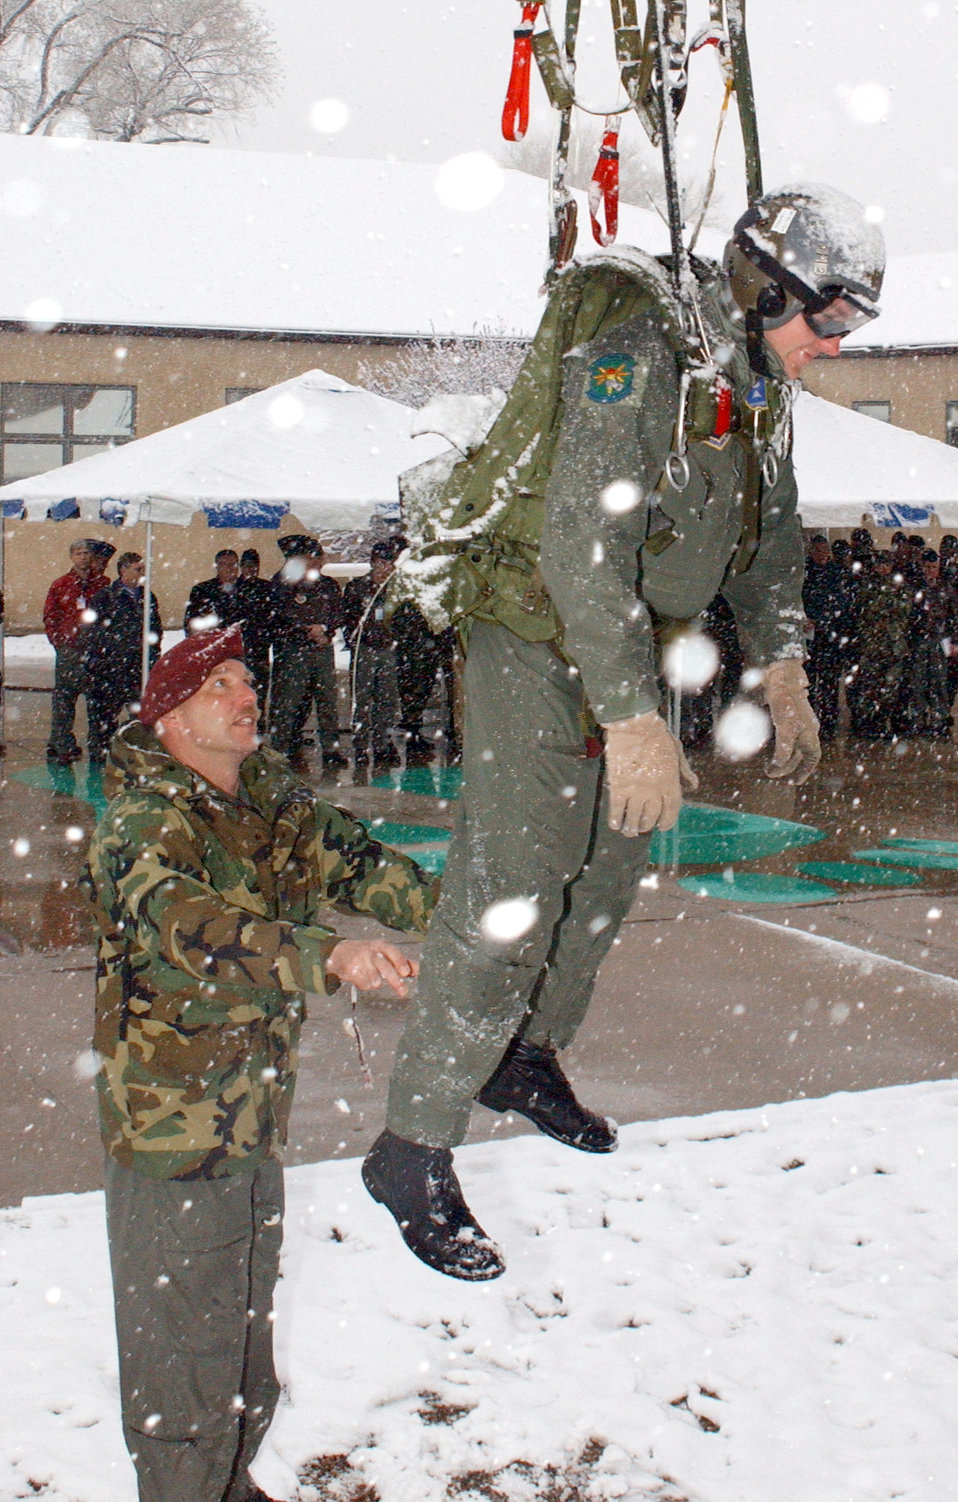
Hanging around

KIRTLAND AIR FORCE BASE, N.M. -- Air Force Pararescueman Tech. Sgt. Robert Bean, (standing), narrates parachute emergency procedures for the Air Force Board during the Board's visit to the Air Force Pararescue and Combat Officers Schools here recently.